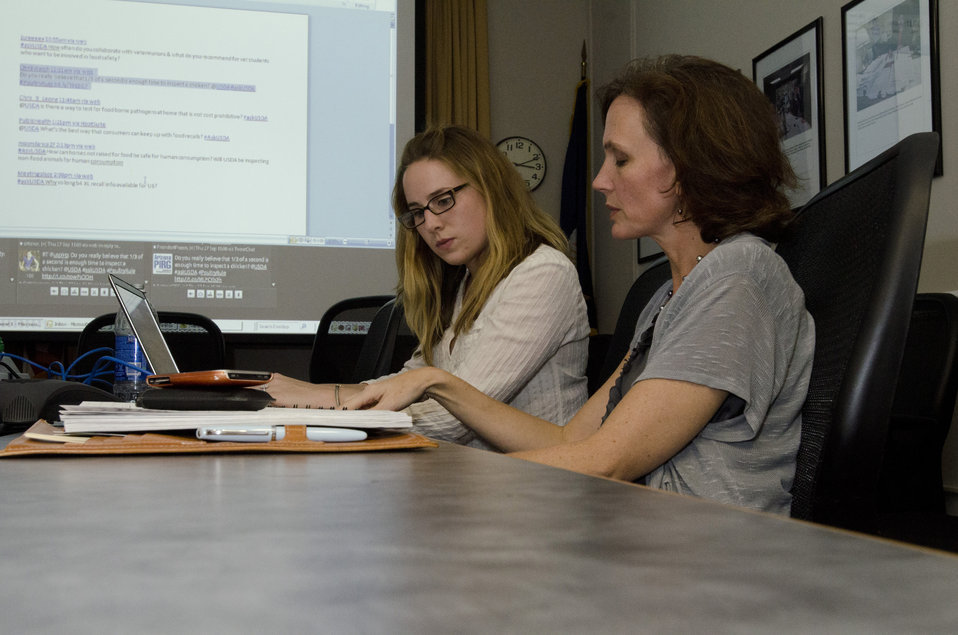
Dr. Elisabeth Hagen, Under Secretary for Food Safety and Inspection Service, (right) assisted by Web Communications Director Amanda Eamich, holds virtual office hours on Twitter for 'It’s National Food Safety Education Month!' on Thursday, September 27, 2012 at the U.S. Department of Agriculture in Washington, D.C.